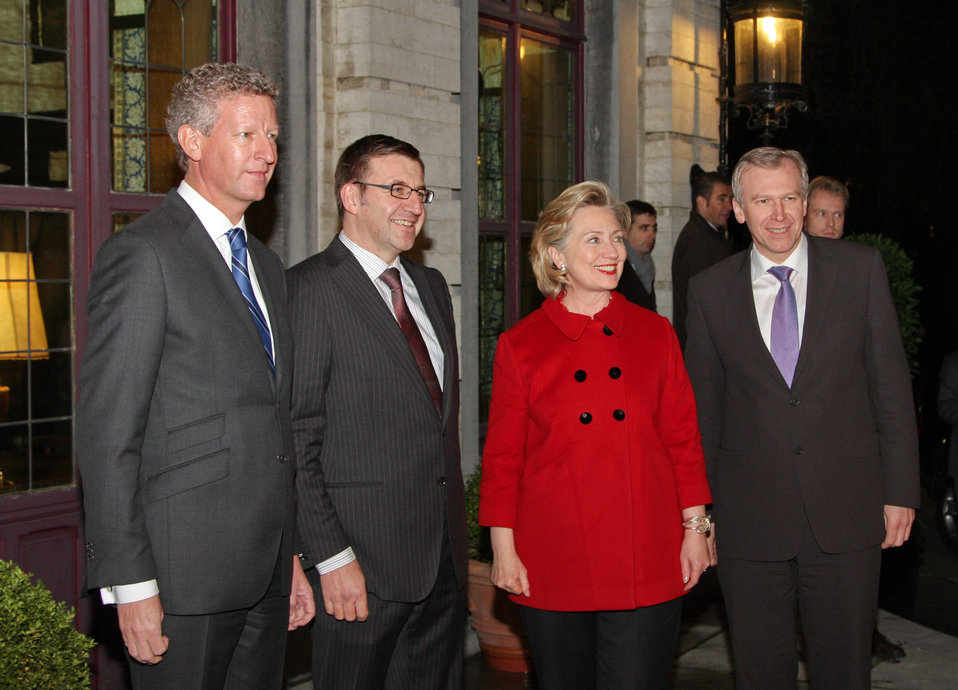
Secretary Clinton Meets With Belgian Officials

U.S. Secretary of State Hillary Rodham Clinton meets with Belgian officials at Val Duchesse in Brussels, Belgium December 4, 2009. [U.S. Embassy Brussels by Freddy Moris / Public Domain]